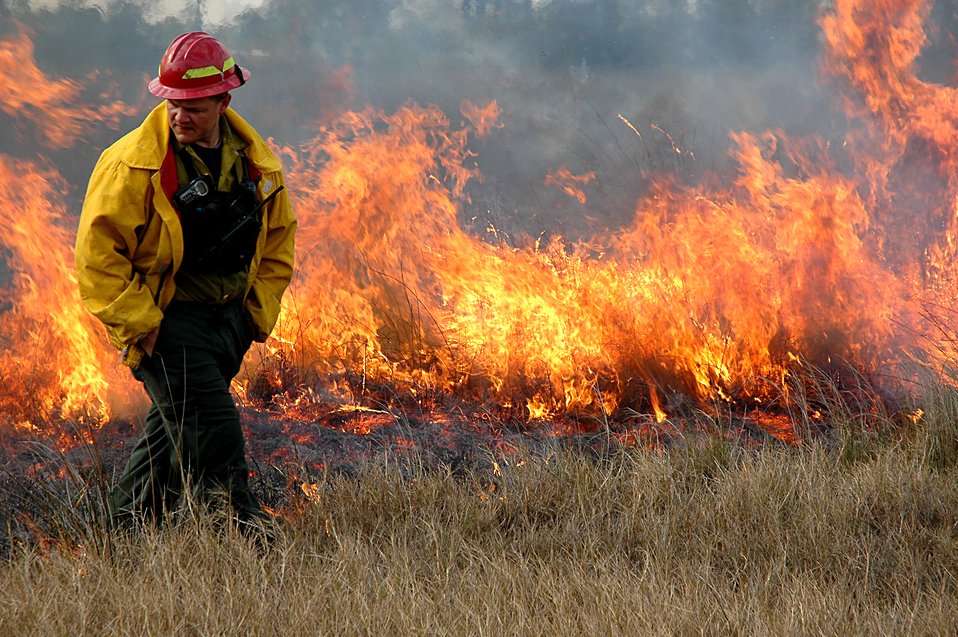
Fighting fire with fire

Terry Walter monitors a control burn Feb. 15 near the Enlisted Club at Tyndall Air Force Base, Fla. Members of 325th Civil Engineer Squadron Natural Resources flight have contained two small fires on the base, which are away from any facilities and unrelated to the large wildfires currently sweeping through the state. One fire on base was started by a lightning strike and the other by a drone launch. The base remains unthreatened because of its use of control burns to increase fire safety and improve wildlife environments. By burning periodically, the threat of unpredictable, disastrous wildfires is reduced and ecological rejuvenation occurs, providing a better environment for Tyndall's 46 federally protected and endangered plant and animal species. Mr. Walter is the wildland fire program manager for the 325th Civil Engineer Squadron.